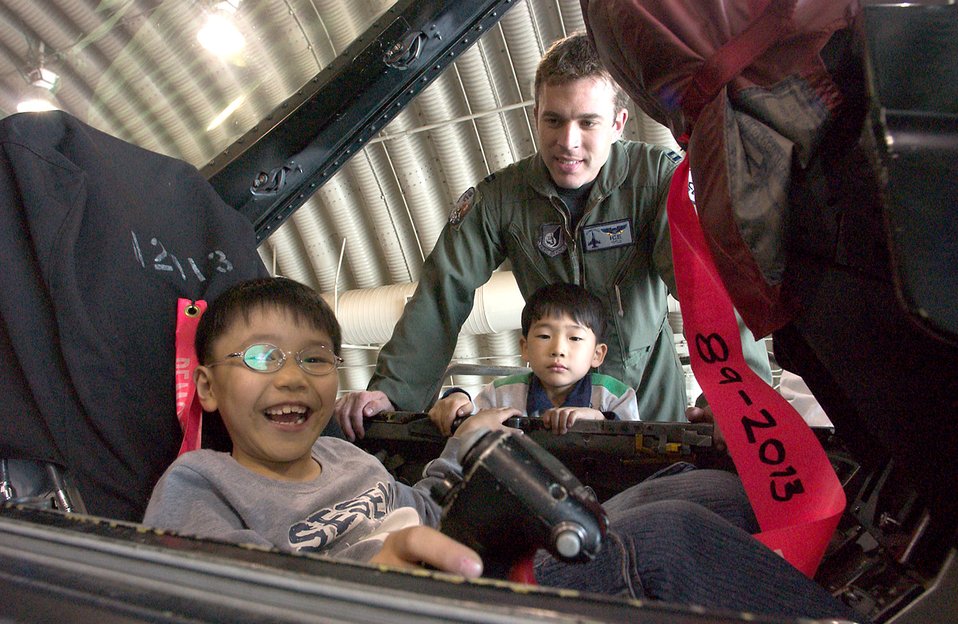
Korean orphans visit Kunsan Airmen

Capt. Aaron Jelinek shows an F-16 Fighting Falcon cockpit to children from a Gunsan City orphanage during their visit April 27 to Kunsan Air Base, South Korea. Airmen of the 35th Fighter Squadron hosted children from the orphanage as part of the 8th Fighter Wing's Good Neighbor Program. Captain Jelinek is a fighter pilot with the 35th FS.